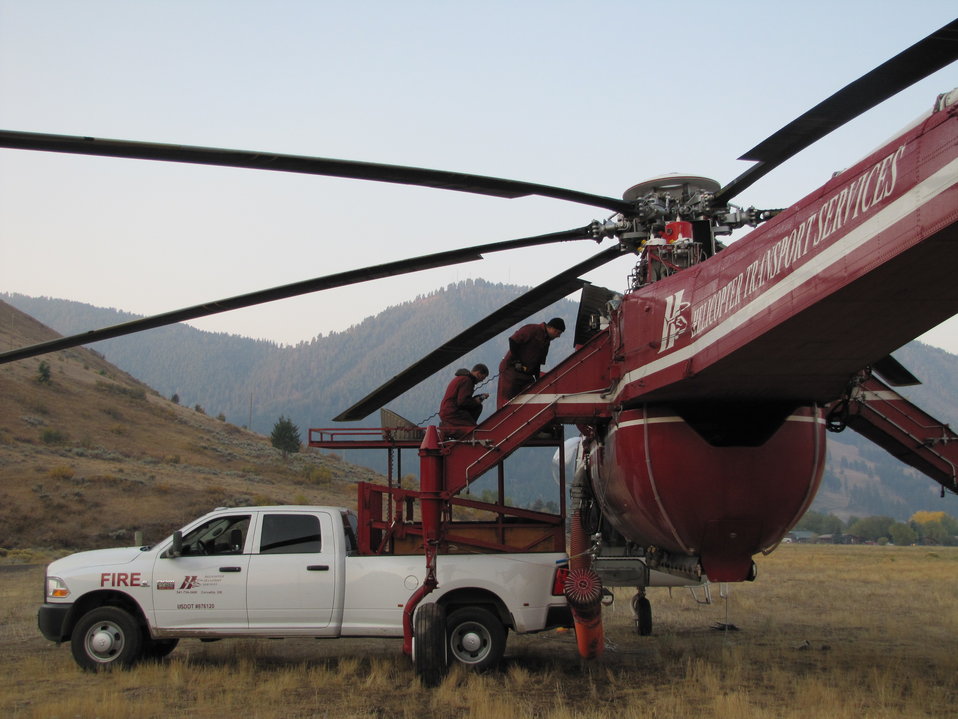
Preparation for Departure

A Type I helicopter makes preparations to relocate to the Chall Creek fire, approximately 30 miles west of Pinedale, WY. Resources are moved from one incident to another as conditions and priorities change.